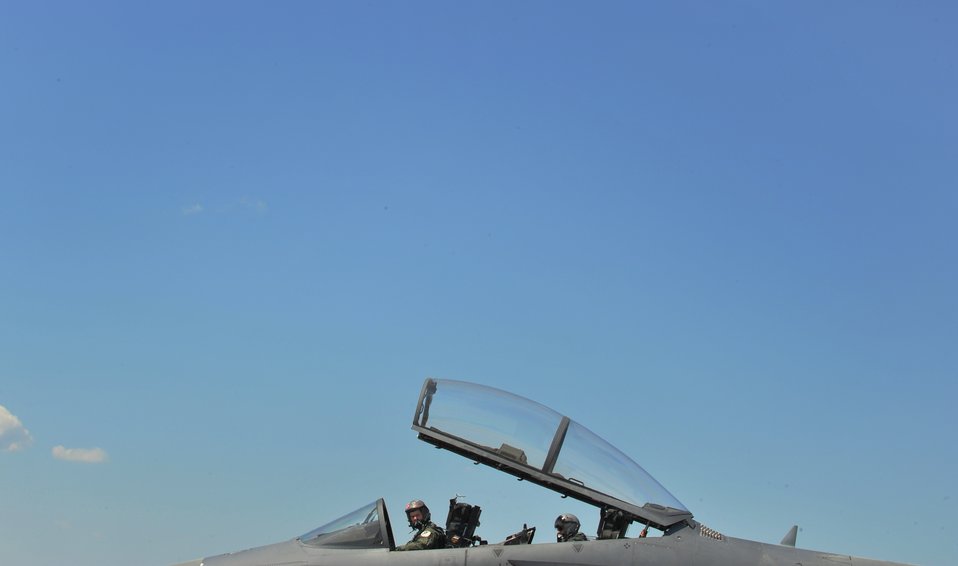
Mustang Mayhem

F-15E Strike Eagle pilots from the 4th Fighter Wing prepare for take off April 13, 2012,, at Seymour Johnson Air Force Base, N.C. Airmen at the base have been preparing for Mustang Mayhem, a training mission to launch 70 F-15E Strike Eagles that will destroy more than 1,000 targets on bombing ranges across North Carolina to pay homage to their history in World War II.